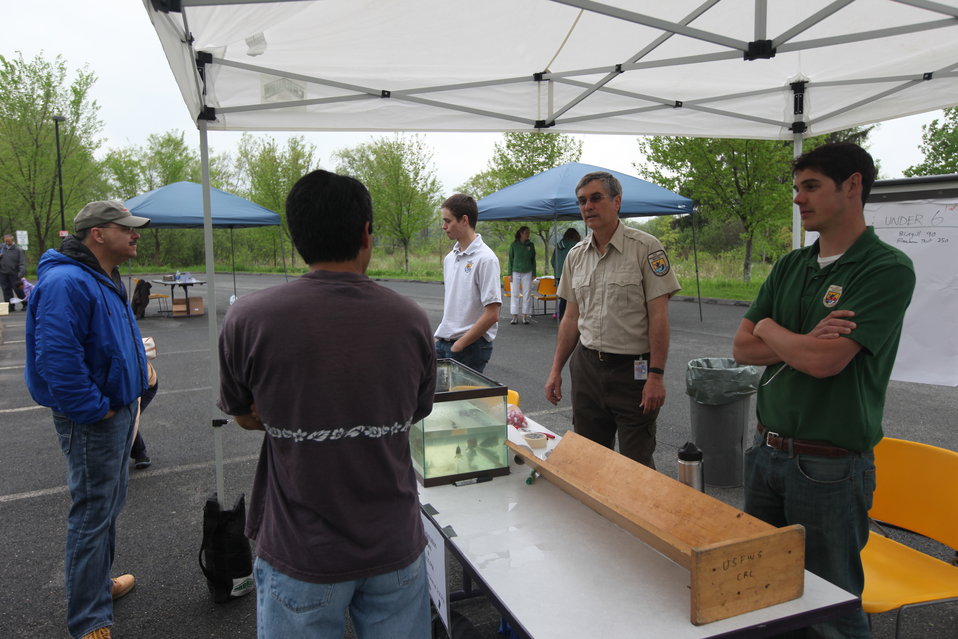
Fishing Derby